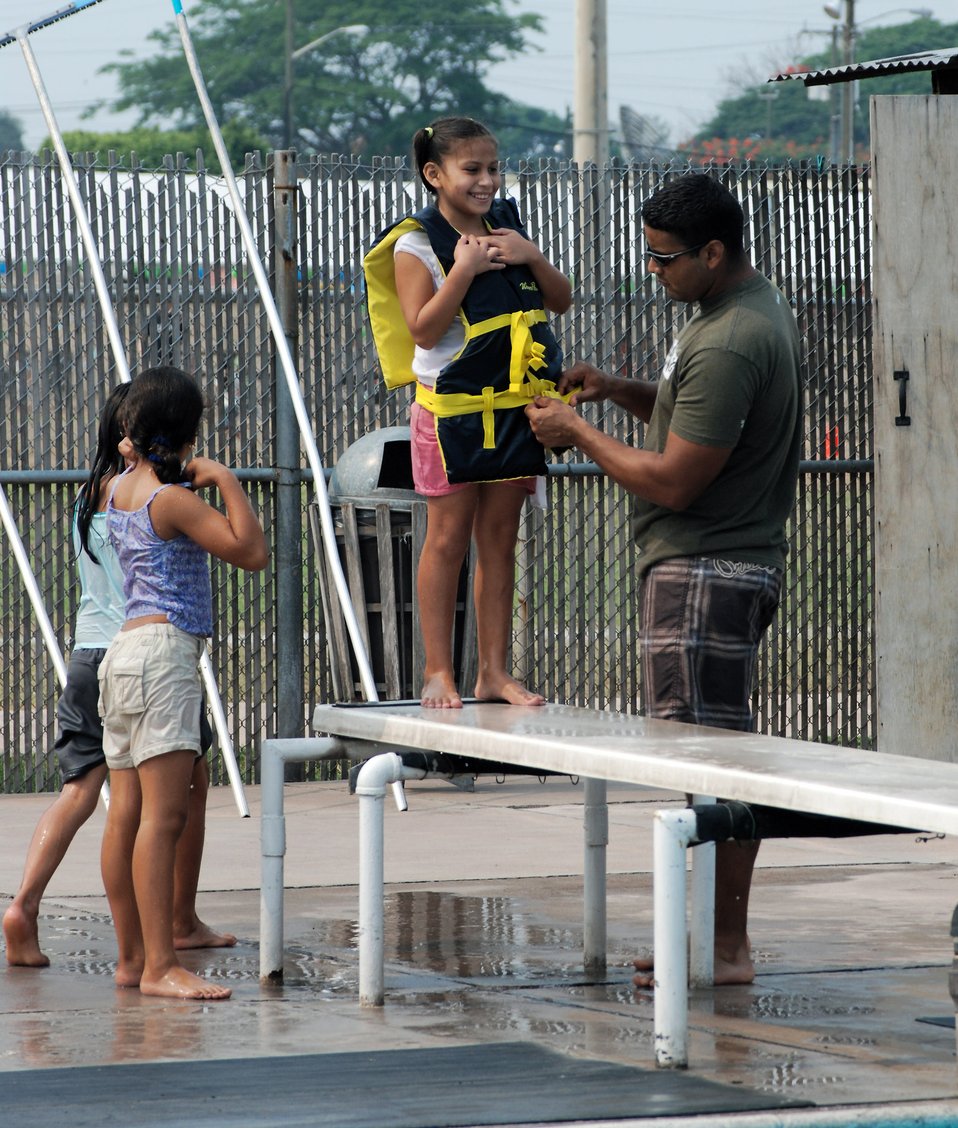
Airmen in Honduras host special day for local children

Staff Sgt. Daniel Santiago helps a girl with a life jacket prior to her diving into the pool May 18 at Soto Cano Air Base, Honduras. More than 100 children and staff from Hogar de Guadalupe Orphanage in El Conejo, Honduras, came for a day of fun and relaxation. Sergeant Santiago is assigned to the 612th Air Base Squadron civil engineer flight.